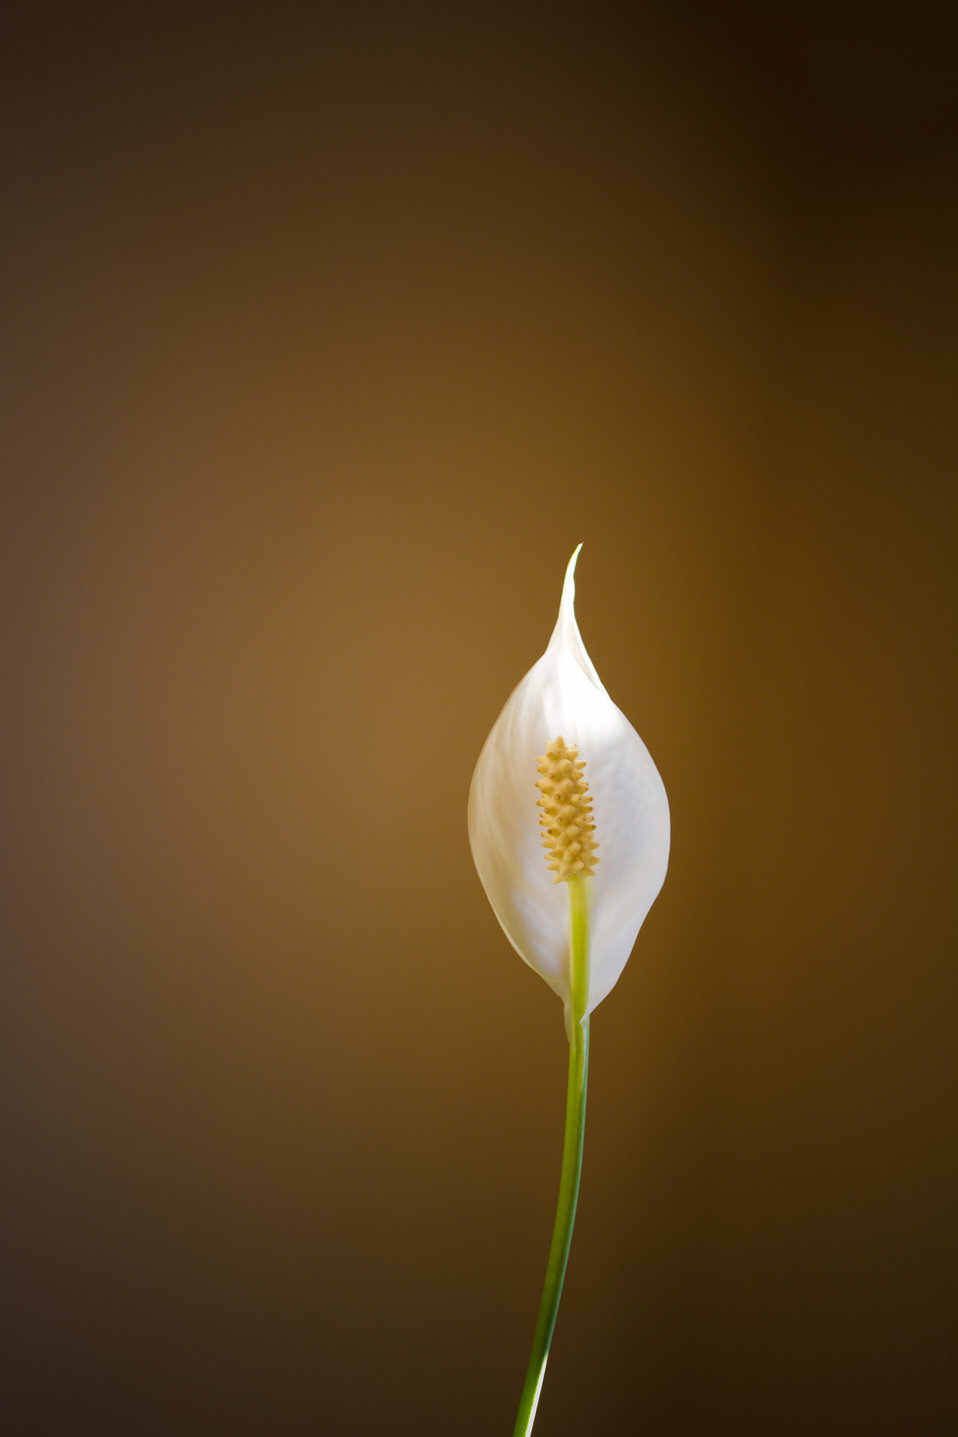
Flower

White flower.